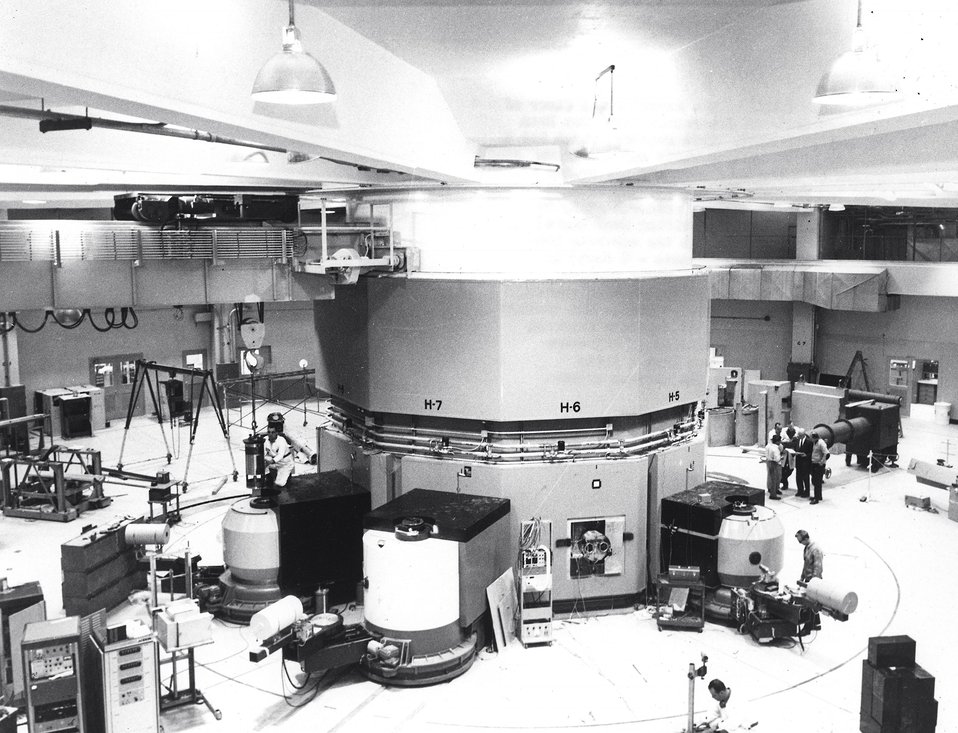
The experimental floor of the Brookhaven National Laboratory High Flux Beam Reactor (HFBR). This reactor, which has a maximum power of 40 million watts and a maximum neutron flux of 1.6 x 10(to the 15th power) neutrons per square centimeter per second. c. 1966